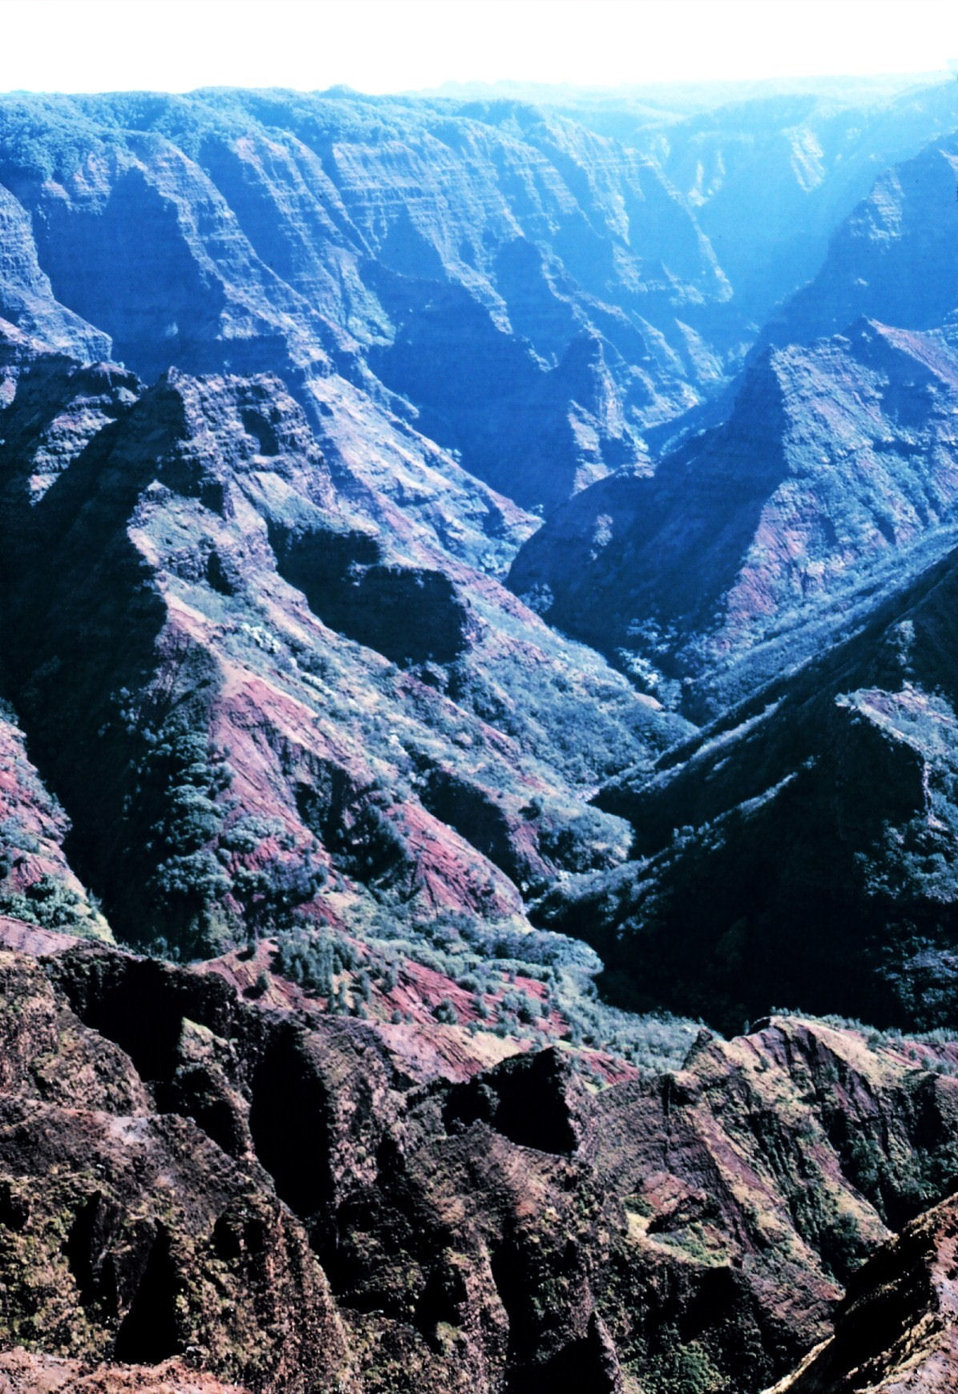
Waimea Canyon - the Grand Canyon of the Pacific